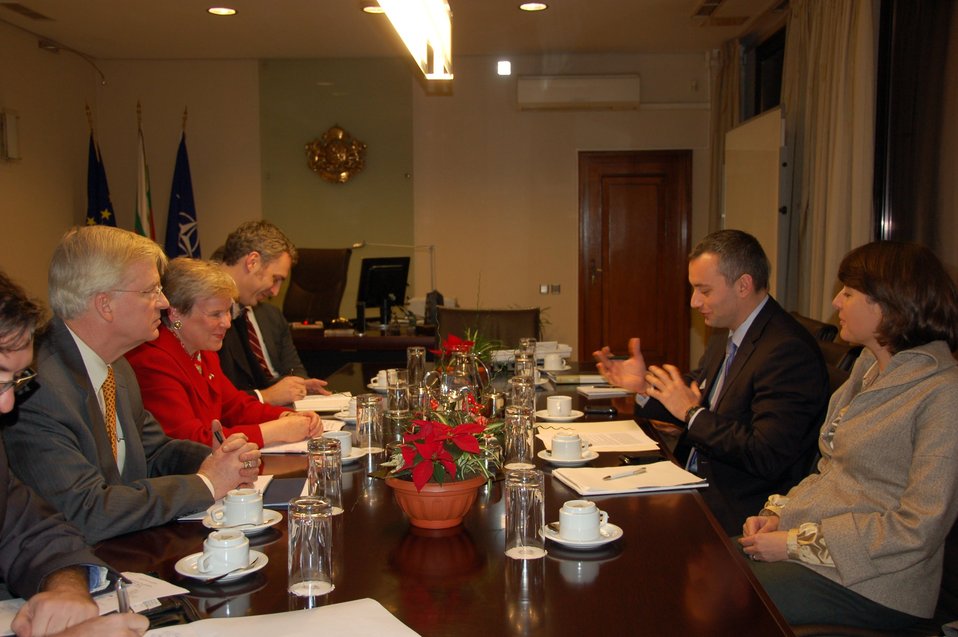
Assistant Secretary Gottemoeller Meets With Bulgarian Foreign Minister Mladenov

Assistant Secretary of State for Arms Control, Verification and Compliance Rose Gottemoeller, center left, meets with Bulgarian Foreign Minister Nikolay Mladenov, second on the right, and Spokesperson for the Ministry of Foreign Affairs Vessela Cherneva, right, in Sofia, Bulgaria, on December 14, 2011. [Bulgarian Ministry of Foreign Affairs photo]